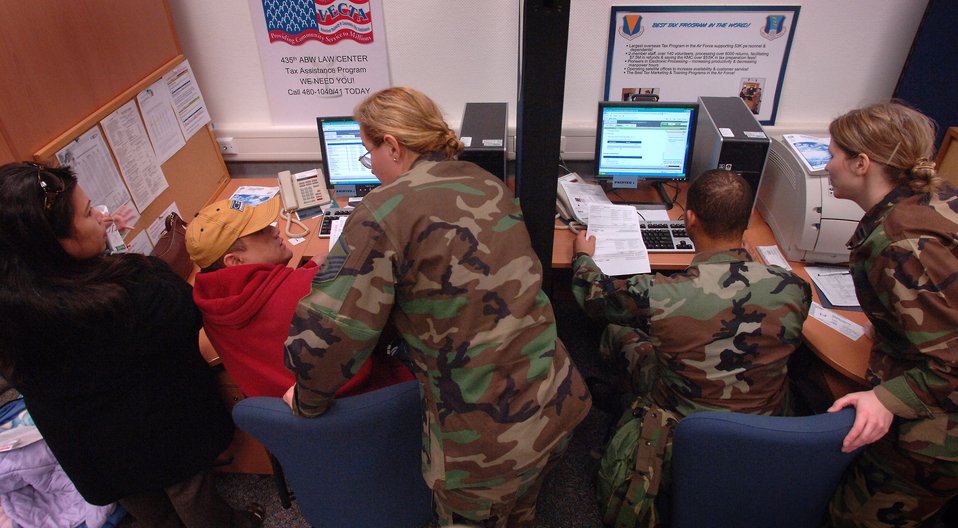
Tax Office

Master Sgt. Mikaela Grogg (left) assists Army Corporal Michael Edillor and his wife, Theresa, while Capt. Mary Ellen Payne assists Airman 1st Class Donovan Barnes, at the tax office at Ramstein Air Base, Germany, Feb. 4. Sergeant Grogg is a volunteer tax assistant assigned to the 435th Mission Support Squadron and Captain Payne is the officer In charge of the Tax Office.